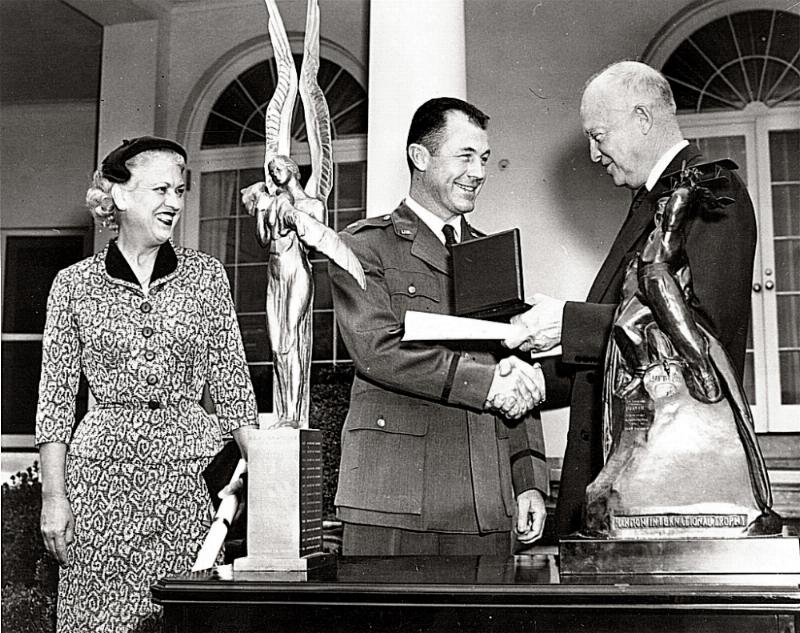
Jackie Cochran and Chuck Yeager being presented with the Harmon International Trophies by President Dwight D. Eisenhower.